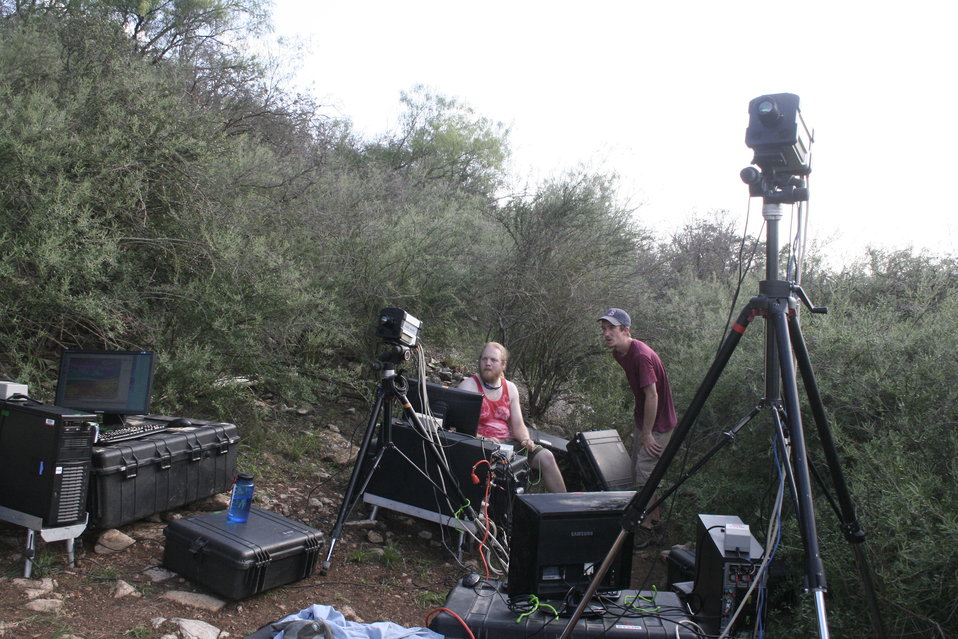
Cameras and equipment